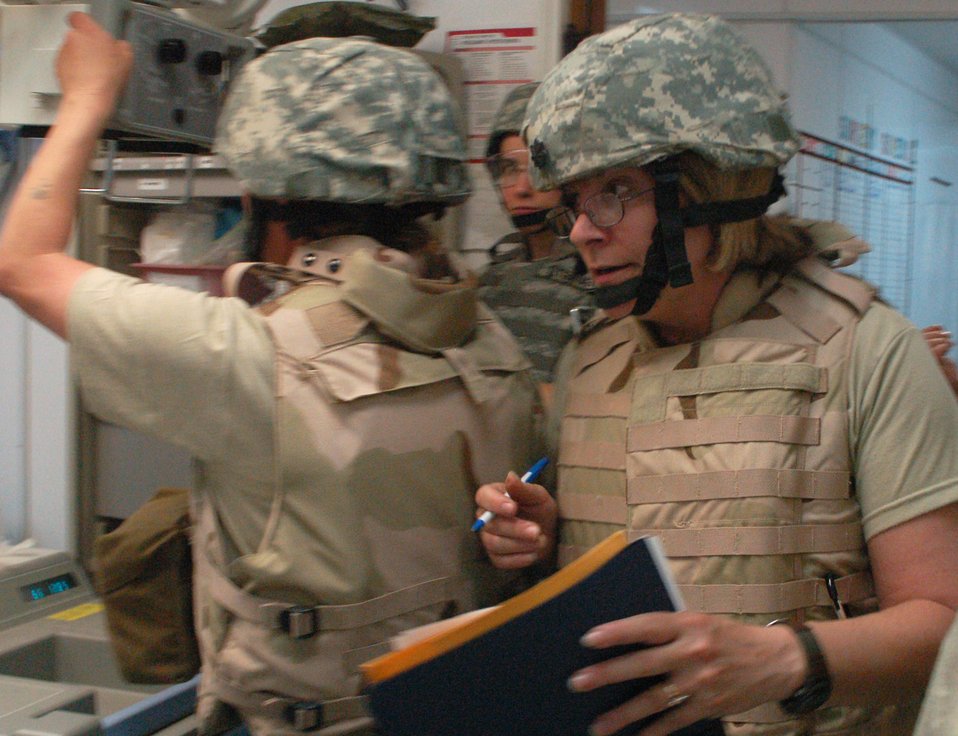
Sather medics prepare for worst

Lt. Col. Patricia Hartman rushes through the organized chaos of the trauma room March 21 at Sather Air Base, Iraq, during a training exercise. The exercise is designed to teach medical skills to non-clinical members. In a combat environment, these procedures can be done by anyone with training, leaving the doctors to tend to the seriously injured. Colonel Hartman is the 447th Expeditionary Medical Squadron's chief administrator.